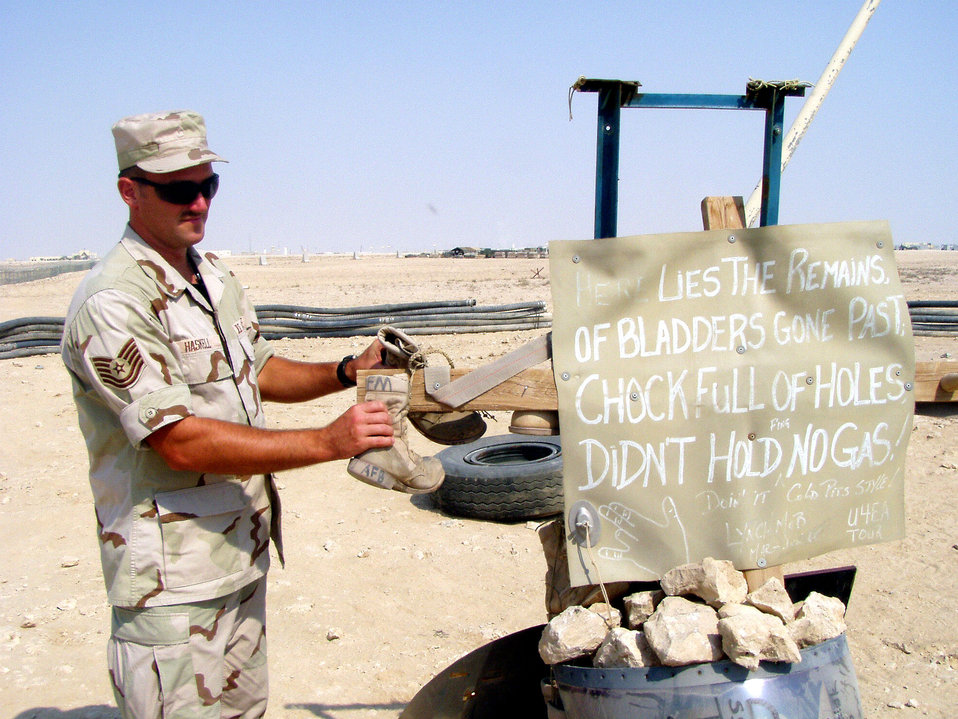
Boot Hill cemetery

AL UDEID AIR BASE, Qatar -- Tech. Sgt. Jack Haskell helps add finishing touches to the Boot Hill